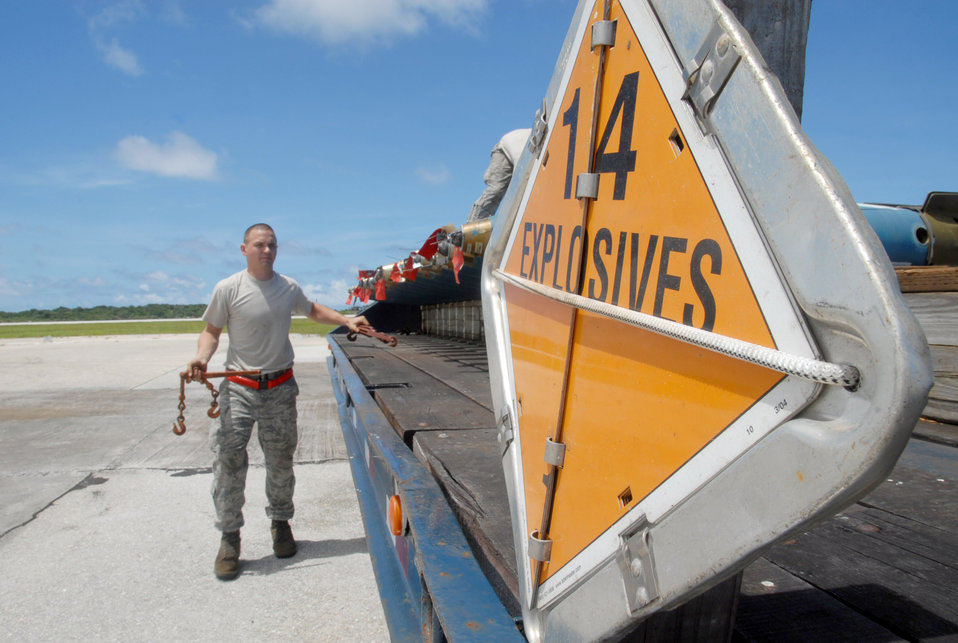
Valiant Shield joint exercise

Senior Airman Benjamin Mentinek looks over a flatbed of Mk 62 Quickstrike naval mines for upload onto a B-52 Stratofortress during Exercise Valiant Shield Sept. 14, 2010, at Andersen Air Force Base, Guam. The exercise focuses on integrated joint training and interoperability among U.S. military forces. Airman Mentinek is assigned to the 36th Expeditionary Maintenance Squadron.